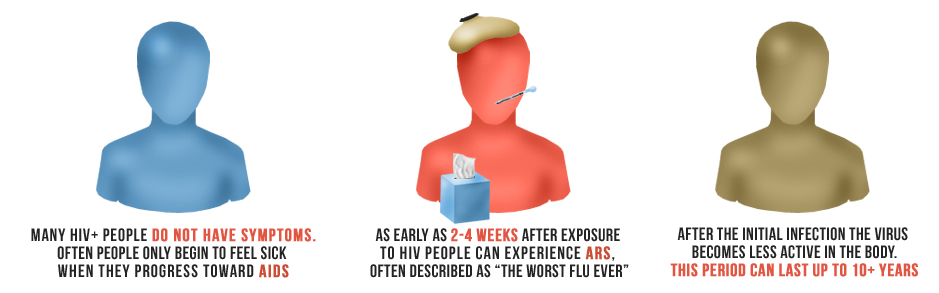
signs and symptoms